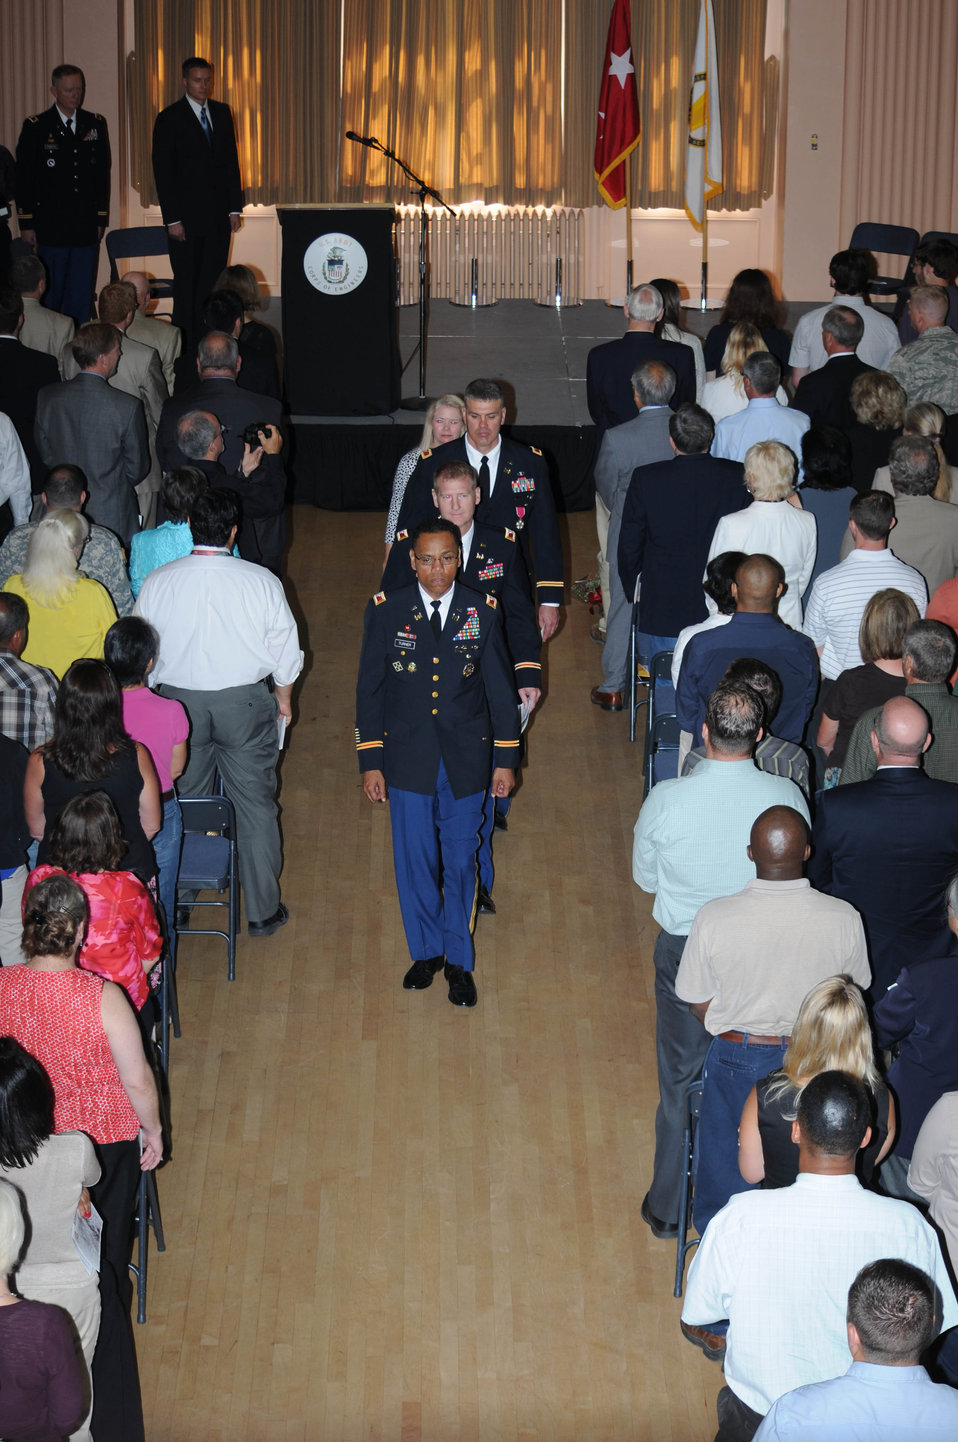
The official party exits the change of command ceremony

Col. David Turner, commander of the U. S. Army Corps of Engineers South Pacific Division, leads the official party out of the Sacramento District’s change of command ceremony July 10. The district held its 30th change of command ceremony between Col. William J. Leady and Col. Michael J. Farrell at the Masonic Lodge in Sacramento, Calif.